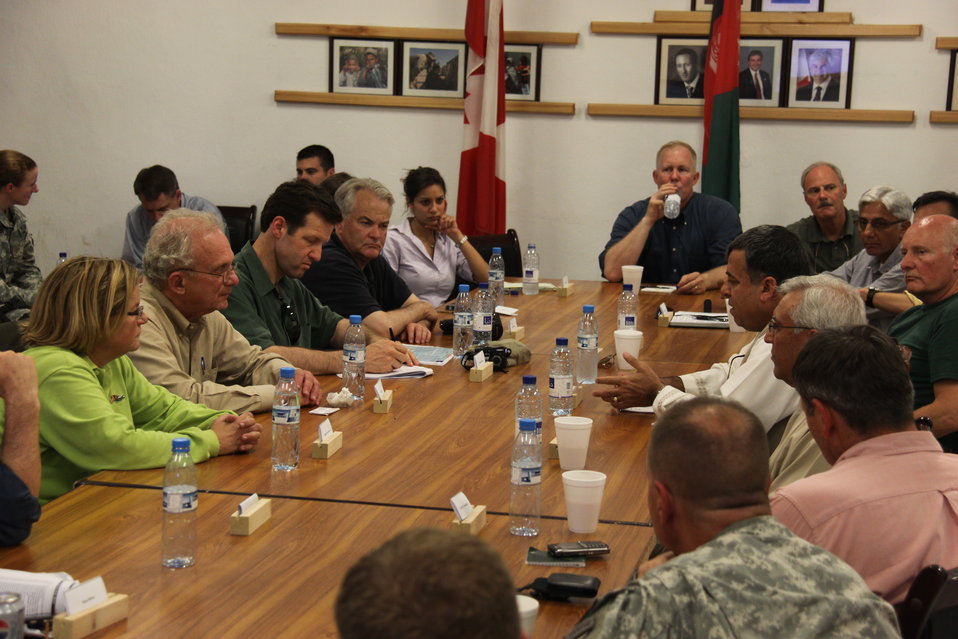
Meeting with Local Leaders in Kandahar